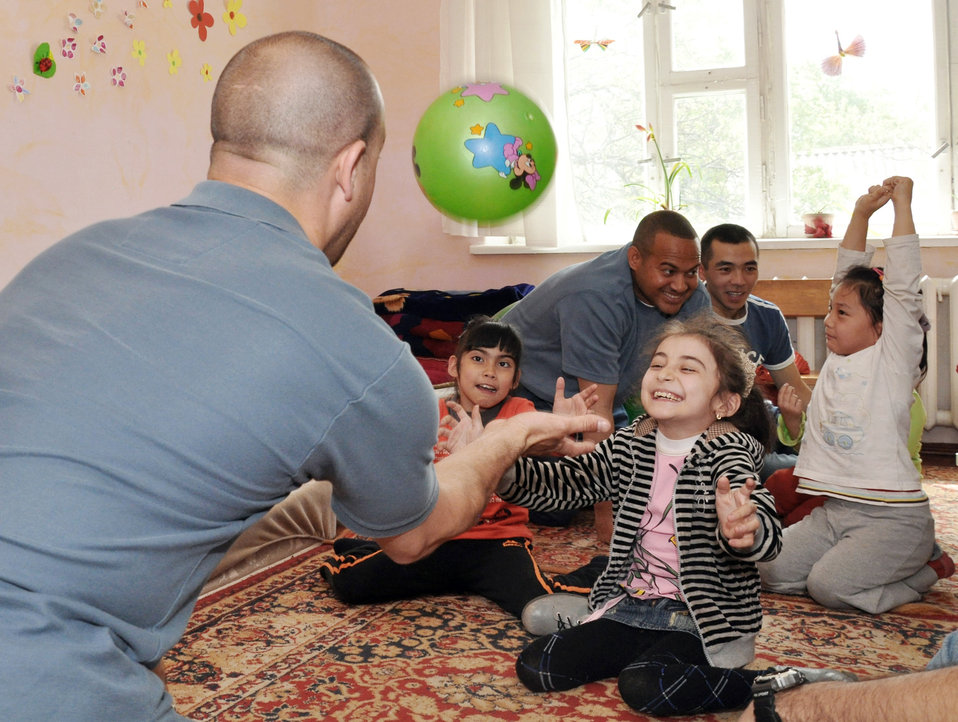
Manas Airmen help support Kyrgyzstan disabled children

Master Sgt. Jeff Villemarette plays with children April 27, 2010, at the Nadjeshda Children's Center in Kyrgyzstan. Nadjeshda is home for 60 children and teenagers who are disabled in different ways. Sergeant Villemarette is assigned to the Transit Center at Manas.